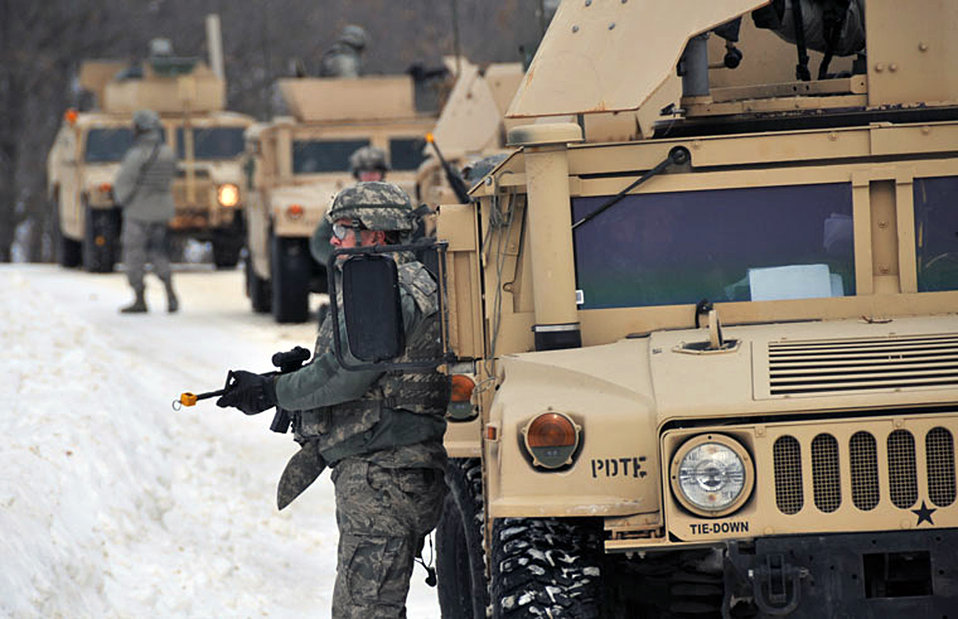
Engineer helps squadron

Engineers train at Fort McCoy, Wis., for their recent deployment to Afghanistan. The engineers are assigned to the 452nd Civil Engineer Squadron at March Air Reserve Base, Calif., and the 934th Civil Engineer Squadron at Minneapolis-St. Paul Air Reserve Station, Minn.